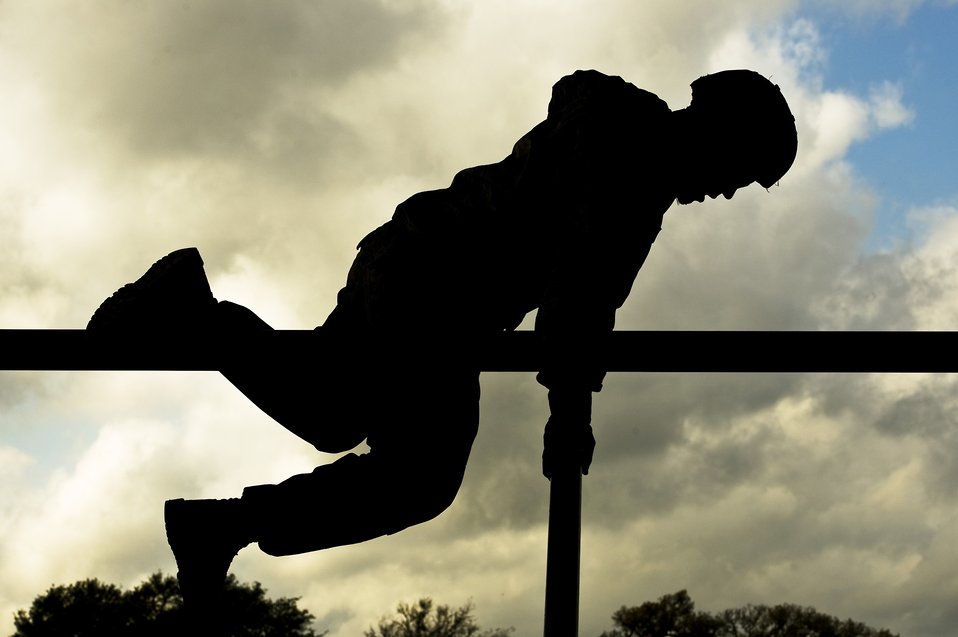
Combat Leadership Course

Senior Airman Daniel West scales an obstacle Oct. 22, 2010, at Camp Bullis, Texas, during the Combat Leadership Course.